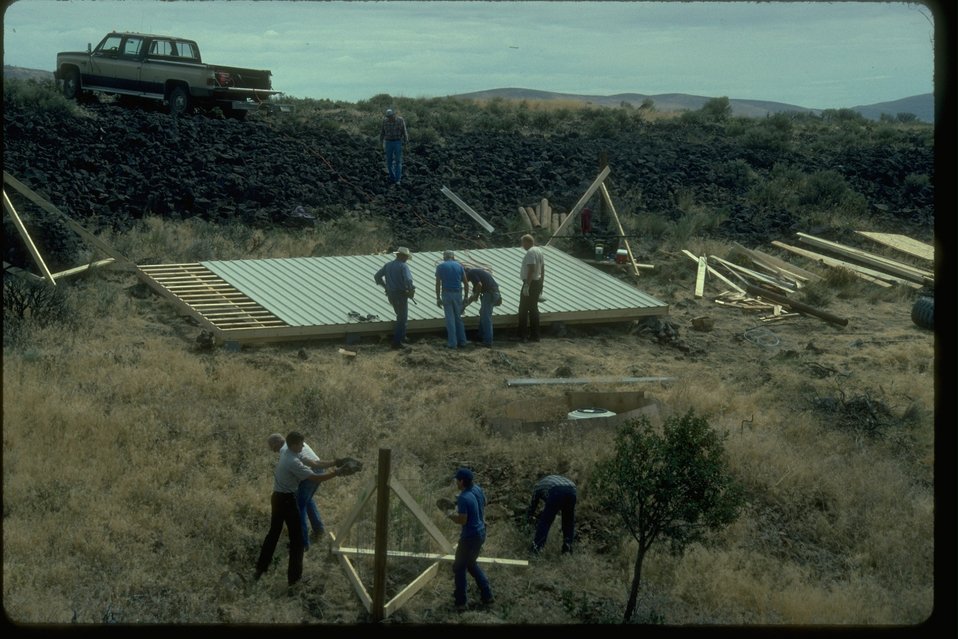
Building a catchment to provide water for bighorn sheep near Yakima River Canyon, Washington.